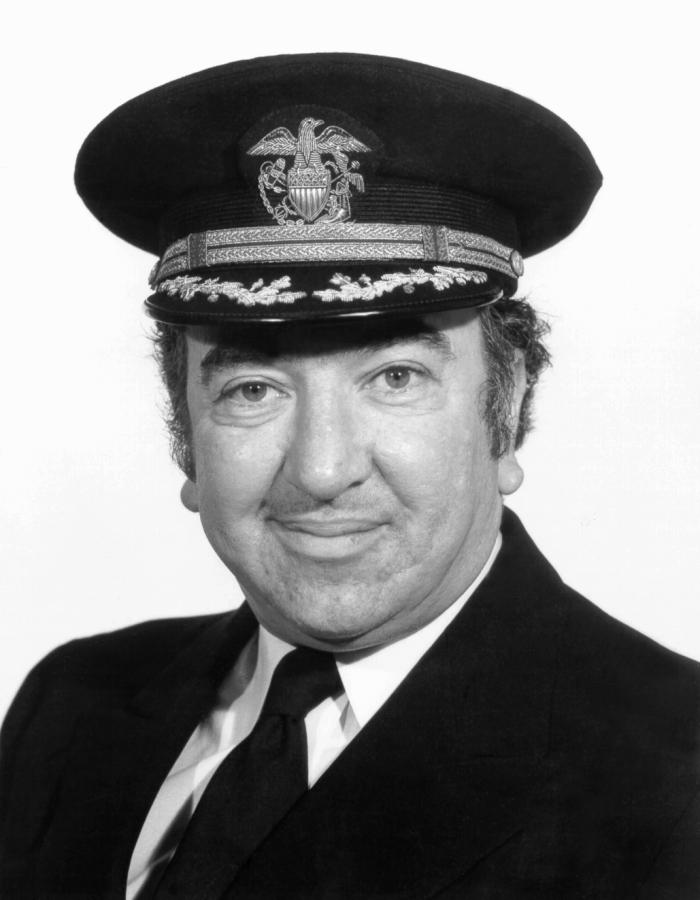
Myron G. Schultz, D.V.M., M.D.

This is a photograph of PHS Commissioned Corps officer, Myron G. Schultz, D.V.M., M.D.